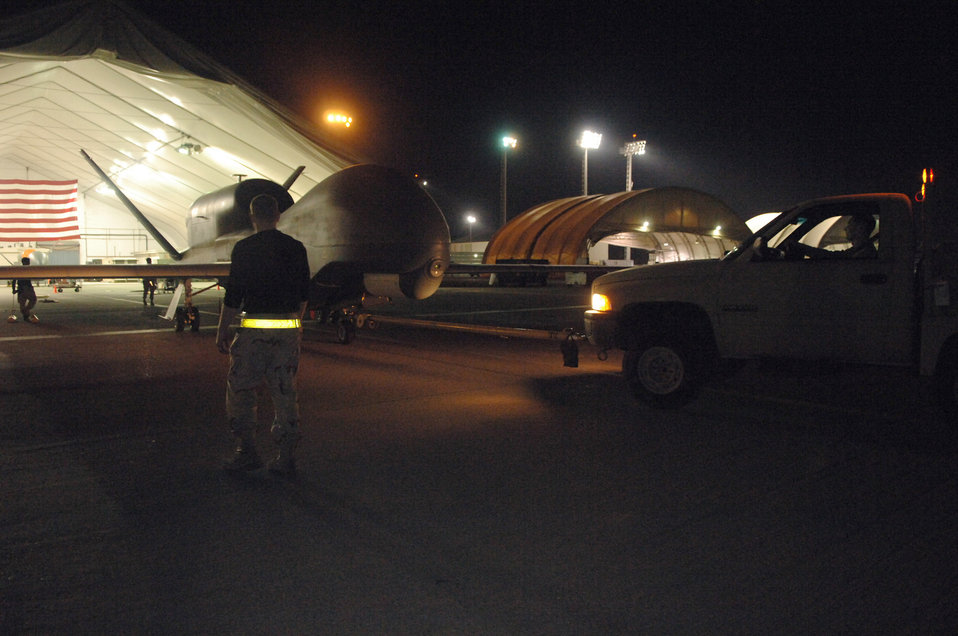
Global Hawk

Members of the 380th Expeditionary Aircraft Maintenance Squadron back an RQ-4 Global Hawk unmanned aerial system into a hanger after a mission March 11in Southwest Asia. The 380th Air Expeditionary Wing has been an integral part in the Global Hawk recently reaching its 10 year and 20,000 flight hour milestones.